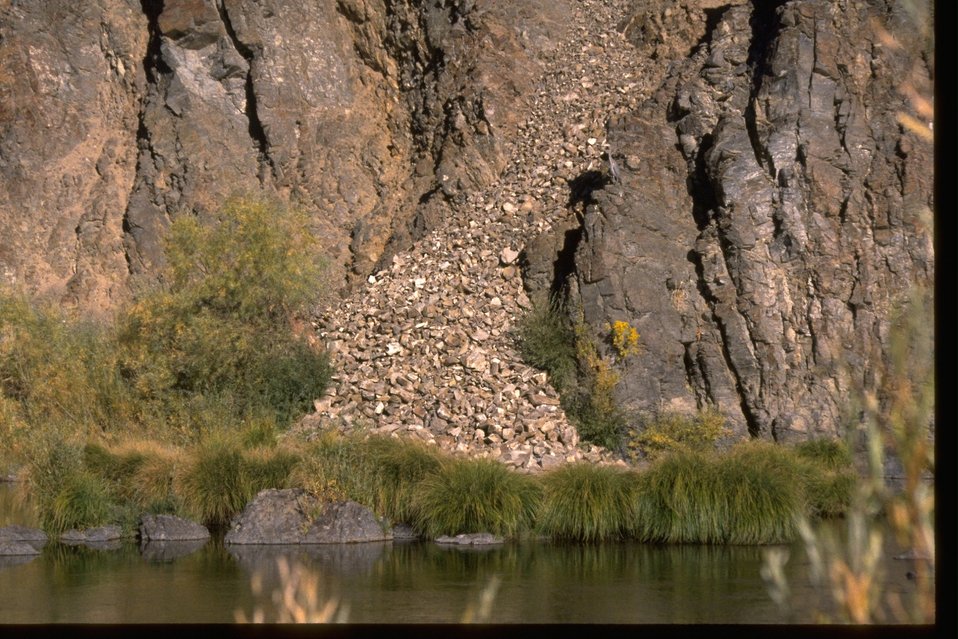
Riparian vegetation along the bank of the John Day River, near Bridge Creek.